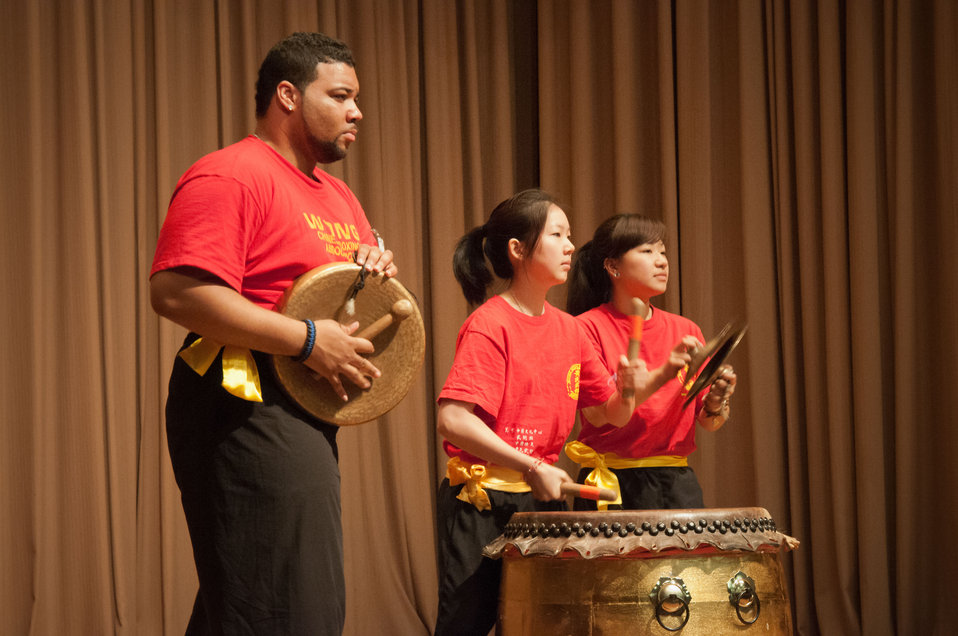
The Wong People Studio, The Ancient Chinese Dragon Dance Group performed the Dragon dance at the 2012 Asian Pacific American Heritage Observance “Striving for Excellence in Leadership, Diversity and Inclusion” at the U.S. Department of Agriculture in Washington, D.C. on Thursday, May 24, 2012. The Dragon dance is an ancient ritual based on Taoist Principles used to drive away evil spirits or bad energy (chi). The costume worn while performing this ritual is specifically designed for the purpose of driving away evil. The music for the Dragon Ritual is also an integral element of this energy directing ritual. A Dragon Ritual is successful when the Dragon, musicians and spectators synchronize their flow of internal energy (chi) to drive away the bad energy.